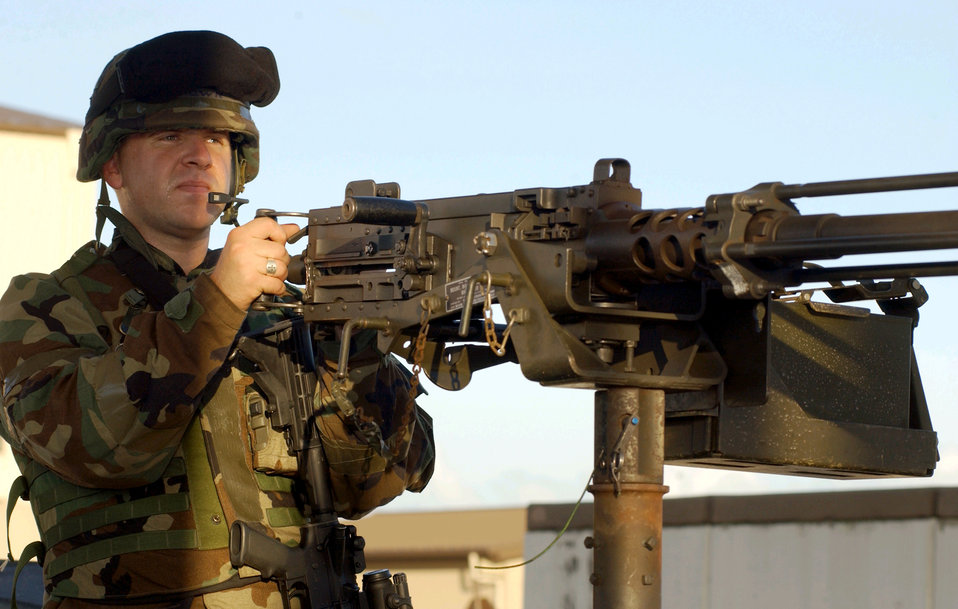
Manning the gun

KUNSAN AIR BASE, South Korea -- Senior Airman Stephen Brown man a .50-calibar machine gun while patroling the flightline during a recent Korean peninsula combat evalution readiness exercise here July 19. Airman Brown is a security forces Airman with the 8th Security Forces Squadron.